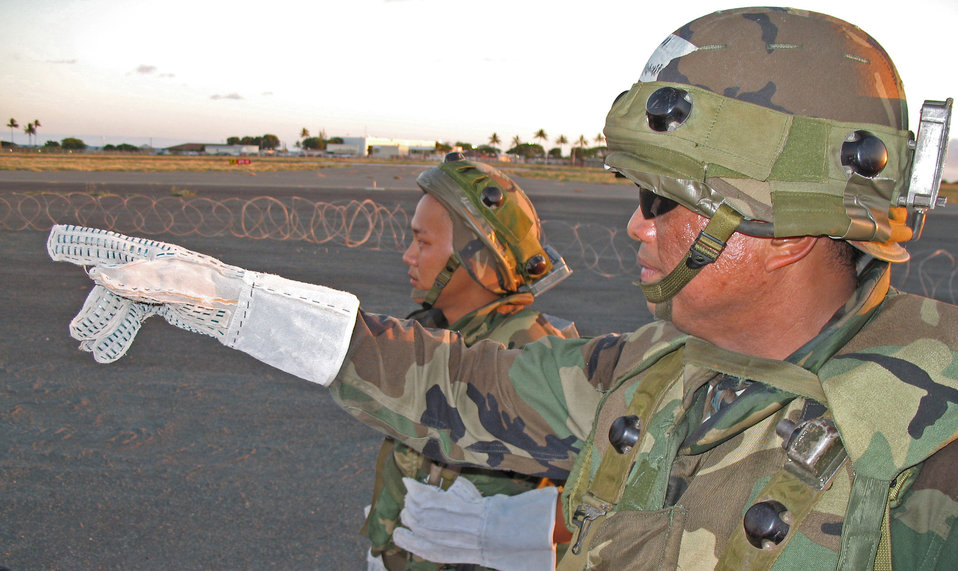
Hawaii air traffic controllers train to fight

Master Sgt. Rodney Arguilles and Senior Airman Pat Takenishi discuss base defense strategies during an exercise at Naval Station Barber's Point, Hawaii, on July 25. The Airmen are with the Hawaii Air National Guard's 297th Air Traffic Control Squadron.